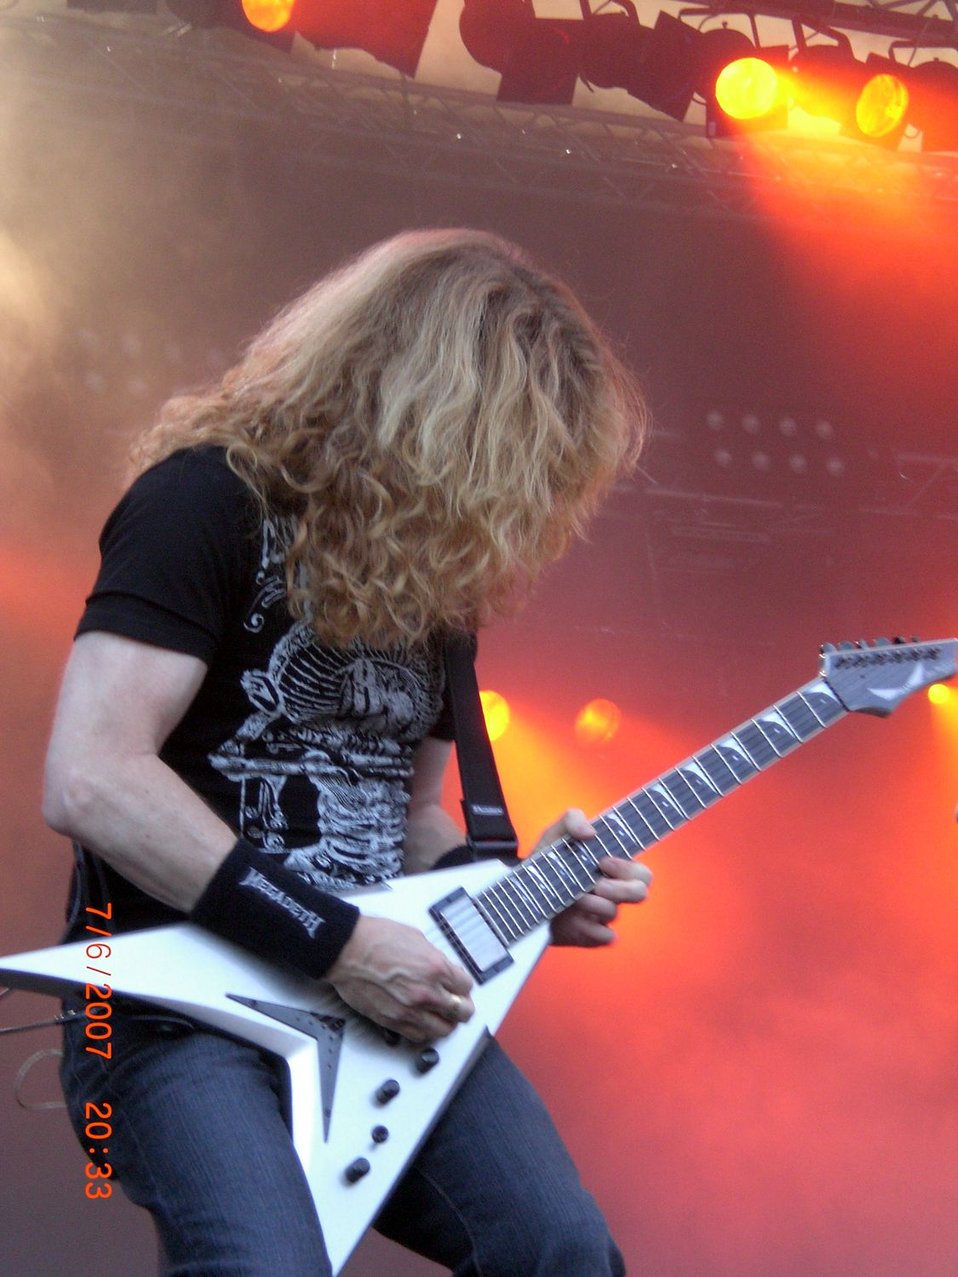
Suomi: Kuvassa Dave Mustaine 2007 Sauna Open Air:ista